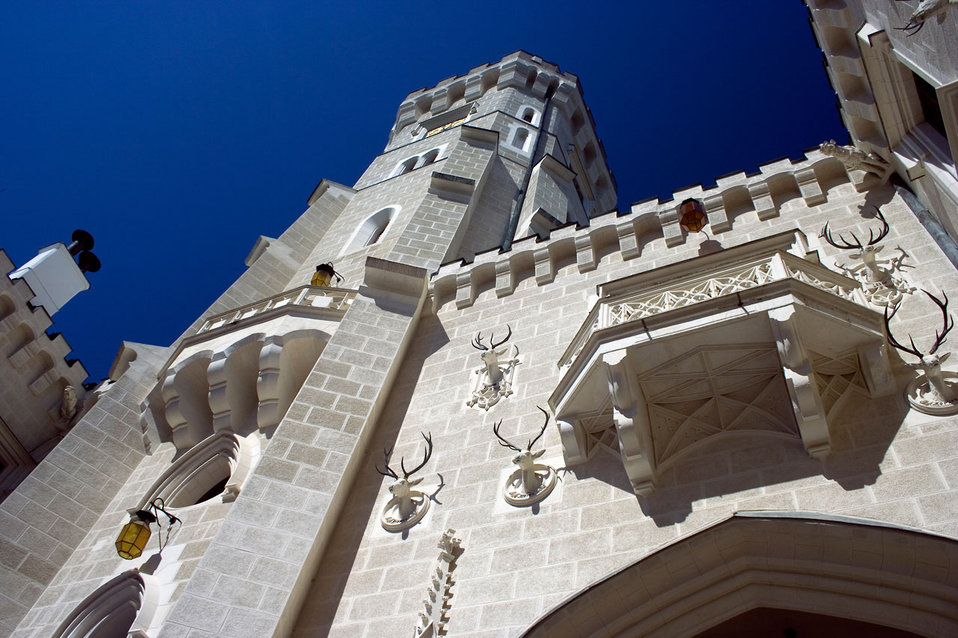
Hluboka castle in south of bohemia.